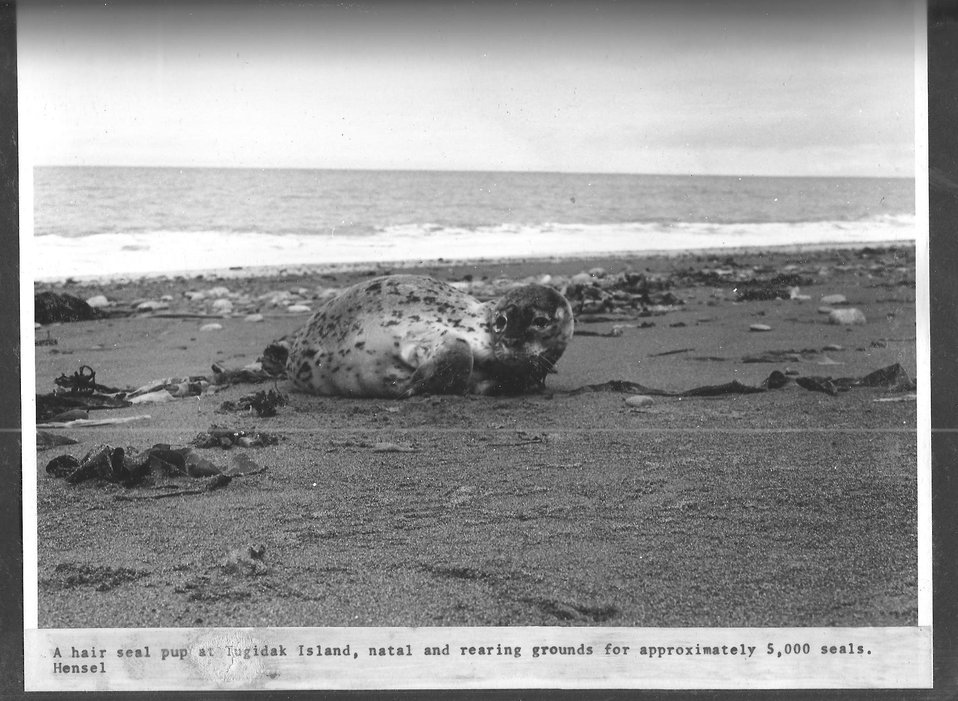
(1970) Hair Seal Pup

Credit: USFWS

Source and Contact: Kodiak National Wildlife Refuge